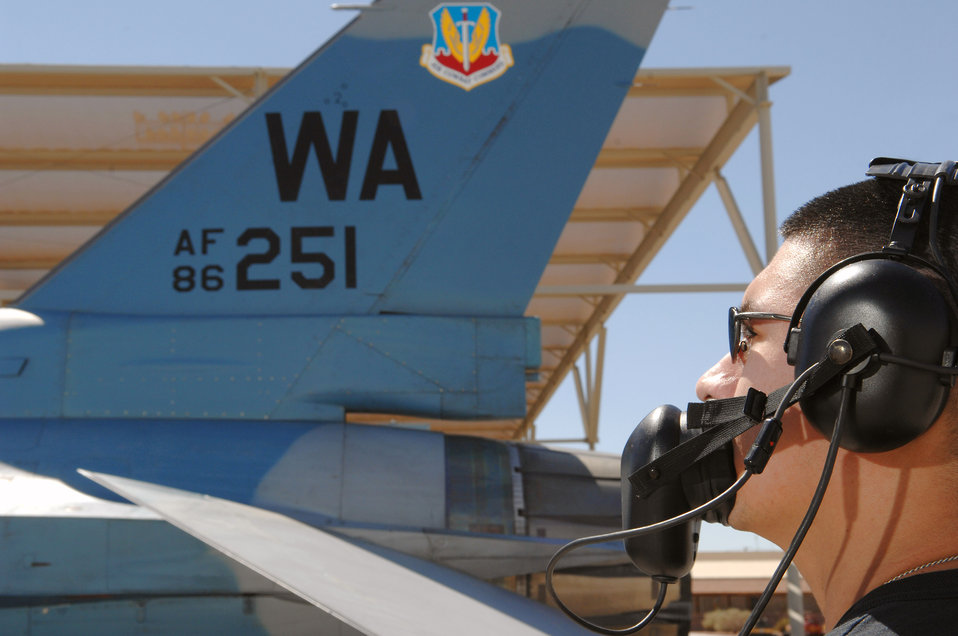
Teamwork

Staff Sgt. Benito Soria conducts a maintenance operational check on an F-16 Fighting Falcon July 24 at Nellis Air Force Base, Nev. The 78th Reconnaissance Squadron, part of the 926th Group, is an Air Force Reserve unit under the 10th Air Force, Naval Air Station Joint Reserve Base, Fort Worth, Texas. The group is located at Nellis AFB as an associate unit to the Air Force Warfare Center. Through total force integration, reservists are integrated into active duty Air Force units, accomplishing the mission alongside active-duty Airmen on a daily basis. Sergeant Soria is an F-16 crew chief assigned to the 78th RS.